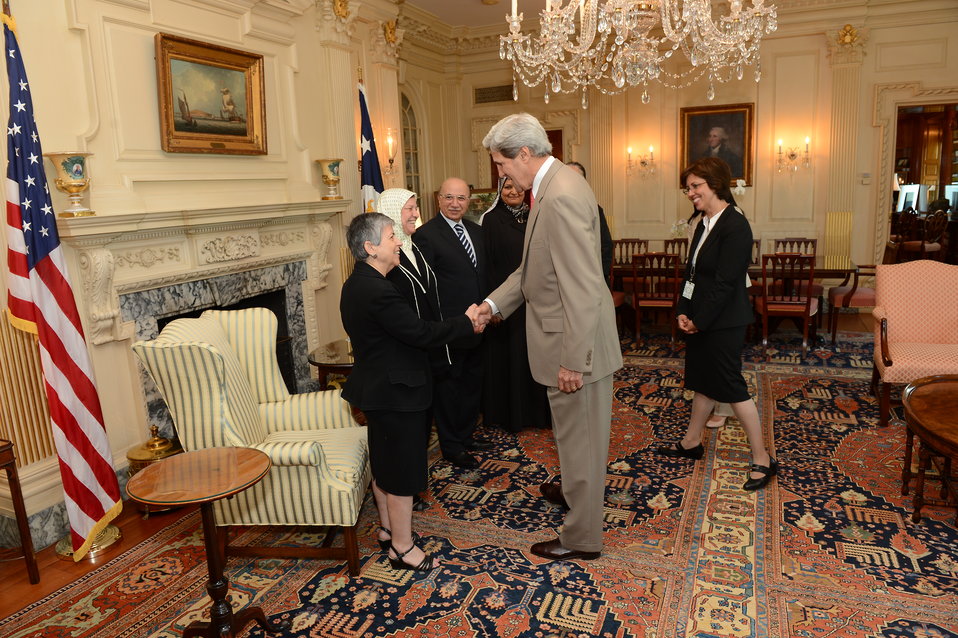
Secretary Kerry Shakes Hands With Iraqi Government and Civil Society Leaders

U.S. Secretary of State John Kerry shakes hands with senior Iraqi government officials and civil society leaders, who are participating in a U.S. program to support Iraqi widows and female heads of household, at the U.S. Department of State in Washington, D.C., on June 14, 2013.